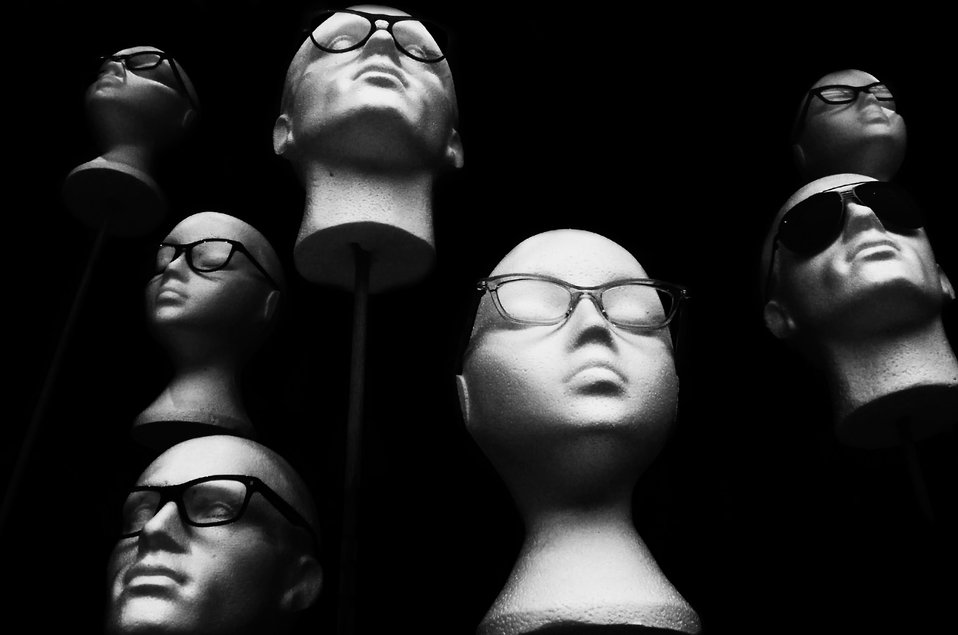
Head and glasses.